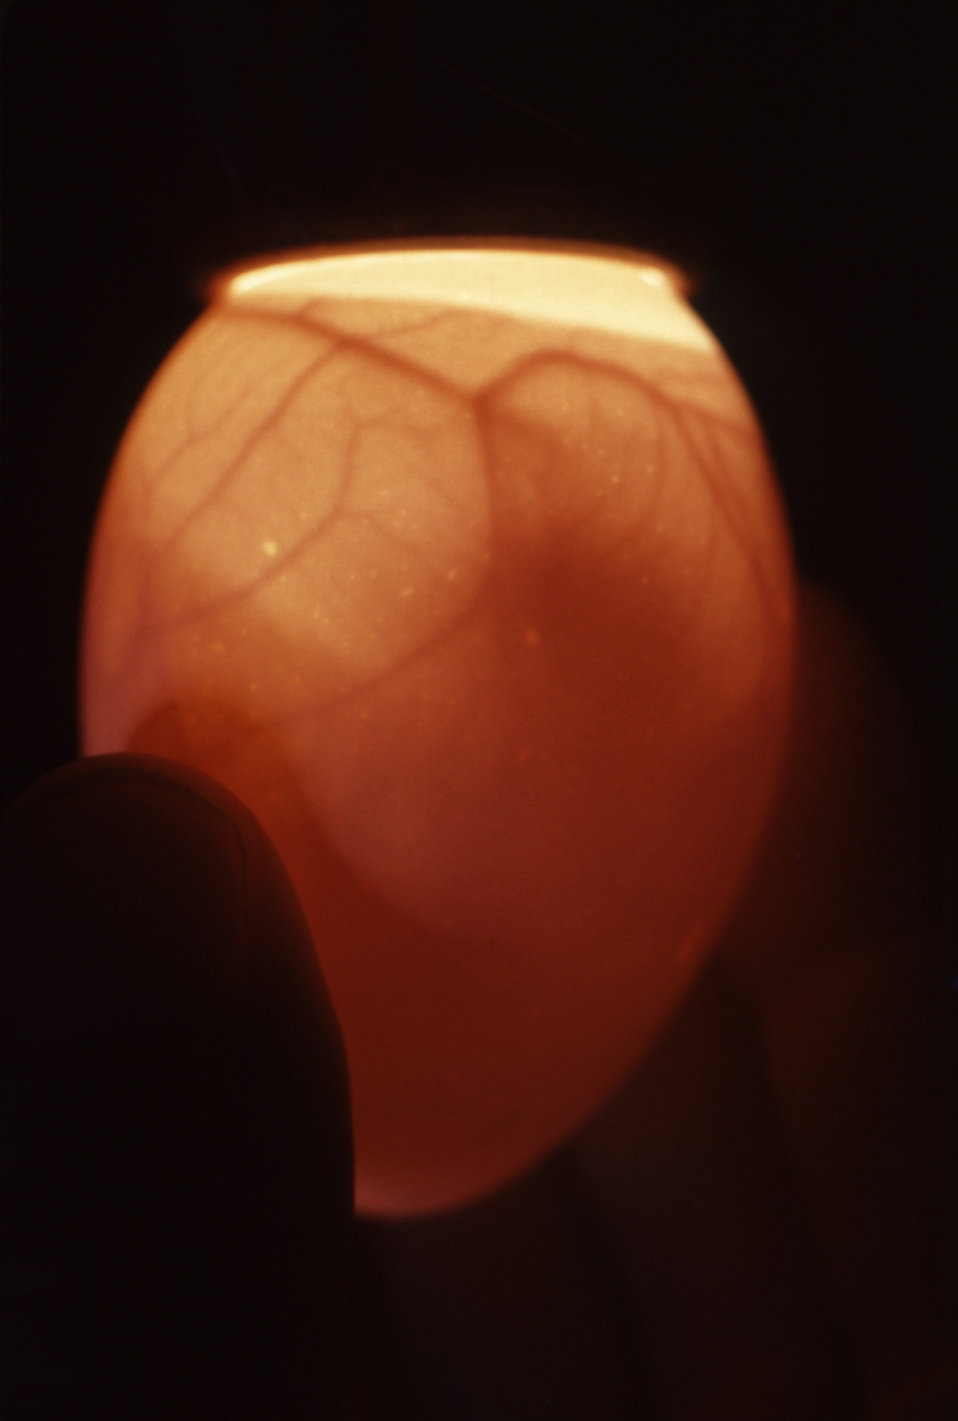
This image depicts the appearance of a healthy, 11-day-old fertilized egg when observed using what is known as a 'candling' procedure. A very bright light is either placed behind the egg, such as was done throughout history by using a candle, hence the name, or employing more modern methods, using a powerful lamp placed against the broad end of the egg. In this way, the contents of the egg are revealed through the translucent shell.